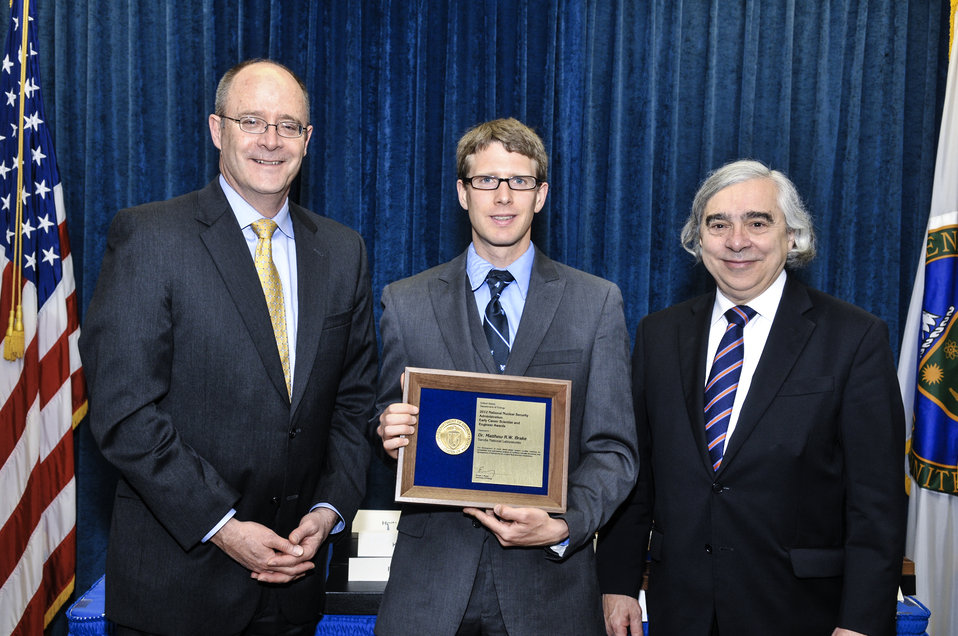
PECASE Awards: DOE Secretary E. Moniz with DOE Acting Administrator and Acting Undersecretary for Nuclear Security Bruce Held on April 14, 2014